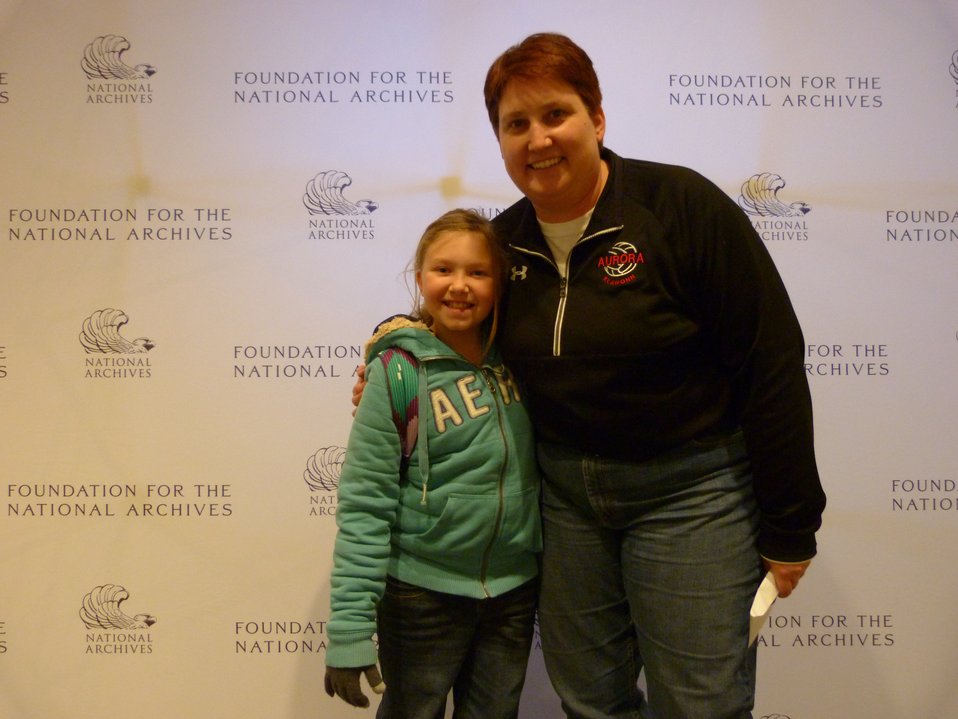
Rotunda Sleepover

Rotunda Sleepoverr; Photo provided by The Foundation for the National Archives